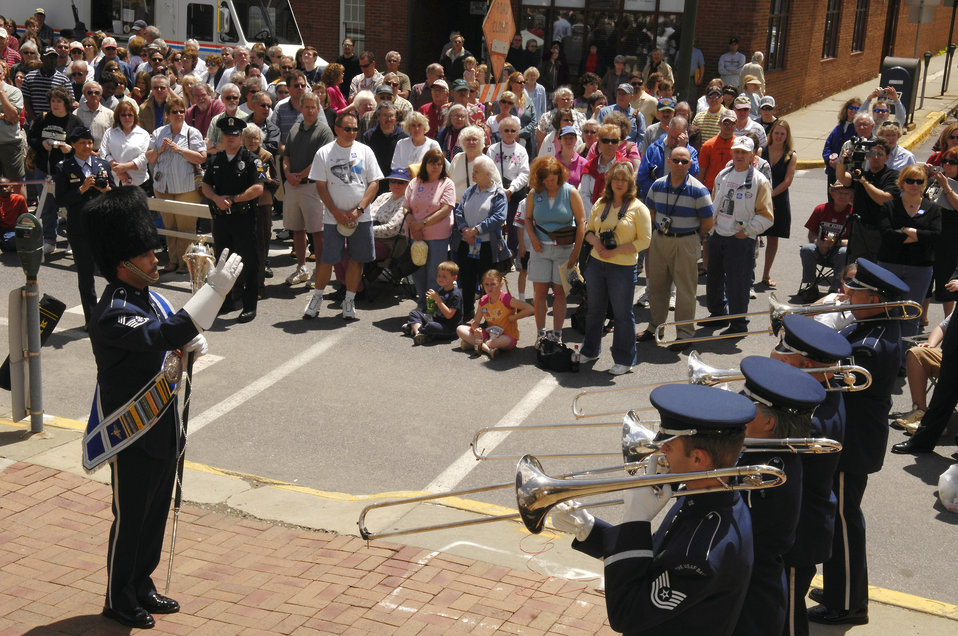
Bolling, Reserve officials honor famous actor, Airman

A crowd listens to the U.S. Air Force Band's Ceremonial Brass during the Jimmy Stewart Centenniel Celebration May 24 in Indiana, Pa. The famed actor and Air Force Reserve brigadier general was born in the town.